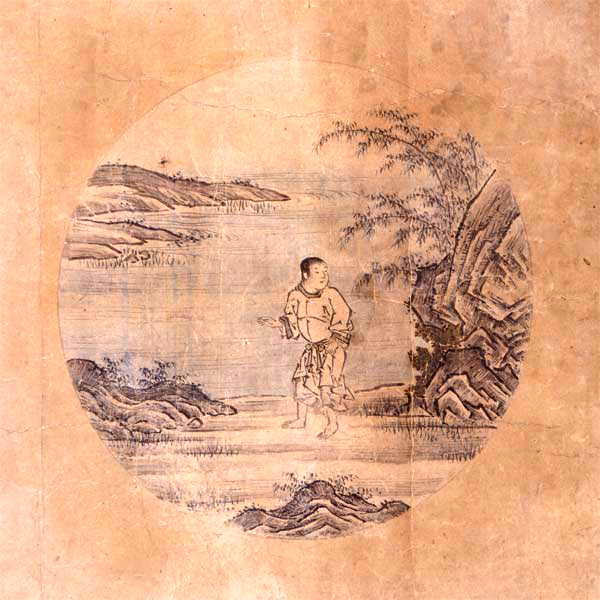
'Looking for the Ox', by Tensh≈ç Sh≈´bun